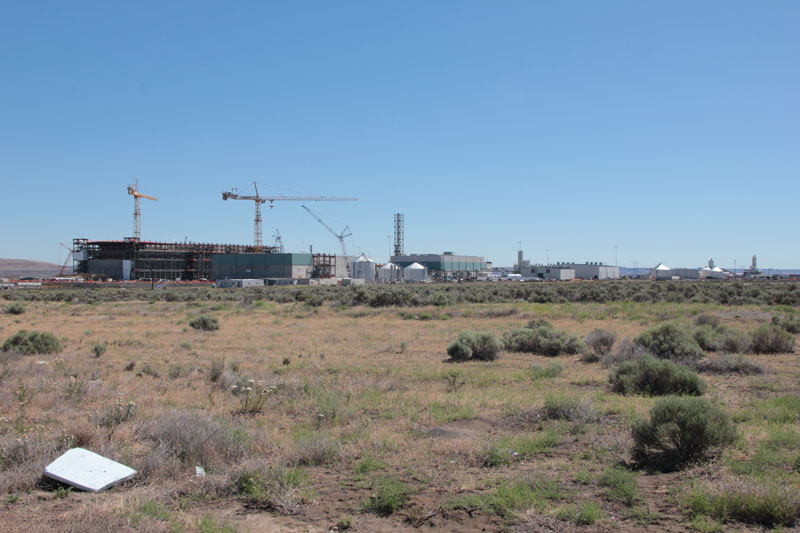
Desert landscape surrounds the Waste Treatment Plant

Other - Desert landscape surrounds the Waste Treatment Plant